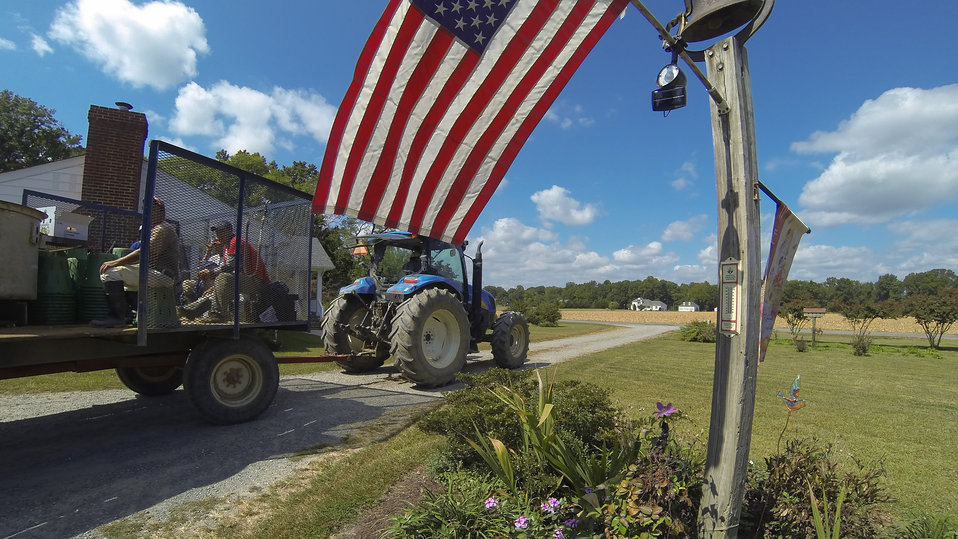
Migrant workers head back to the fields to pick squash, at Kirby Farms in Mechanicsville, VA on Friday, Sept. 20, 2013. Kirby Farms devotes 200 acres of the farm to eggplant, spinach, beets, tomato, jalapeno peppers, melons and a variety of greens. Soybeans and small grain are grown on the remaining 300 acres. The fertile Virginia soil and their management practices, allows Kirby Farms to double and triple crop fields with rotational crop selection. Wholesalers, who buy from this farm, sell the produce to major supermarkets in the Mid-Atlantic region, from North Carolina to Maryland. Restaurants in the local area prepare and serve their harvest to patrons in the Greater Richmond, VA Region.